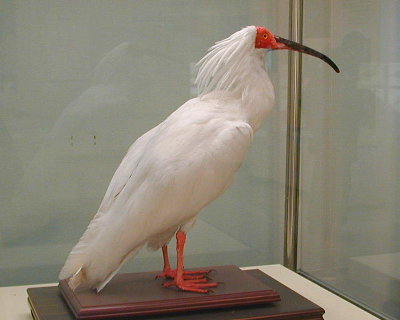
Binomial: Nipponia nippon (Temminck, 1835) Reichenbach, 1853 English: Crested Ibis 日本語: トキ 中文: 朱鹮 This is the last 'Japanese' Crested Ibis, named 'KIN'.